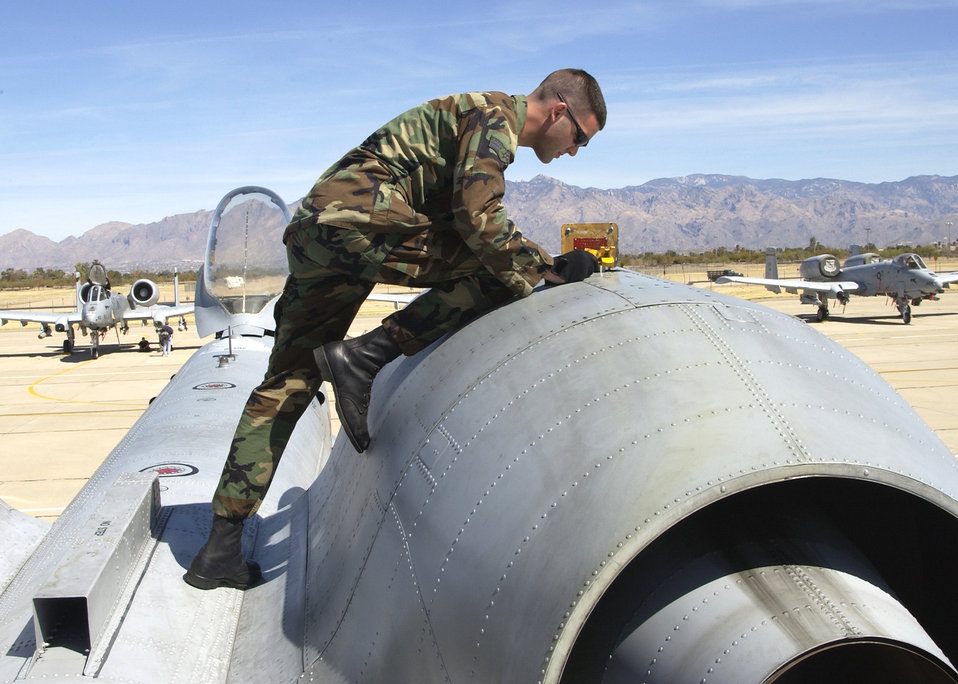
Thunder alley

Senior Airman Paul Delgreco maintains the oil of an A-10 Thunderbolt II Thursday, March 23, 2006, during the 2006 Hawgsmoke competition at Davis-Monthan Air Force Base, Ariz. Hawgsmoke is a biennial worldwide A-10 bombing, missile and tactical gunnery competition. This year's competition coincides with the 30th anniversary of the A-10 rollout in the Air Force inventory. Airman Delgreco is with the 103rd Aircraft Maintenance Squadron in Bradley, Conn.